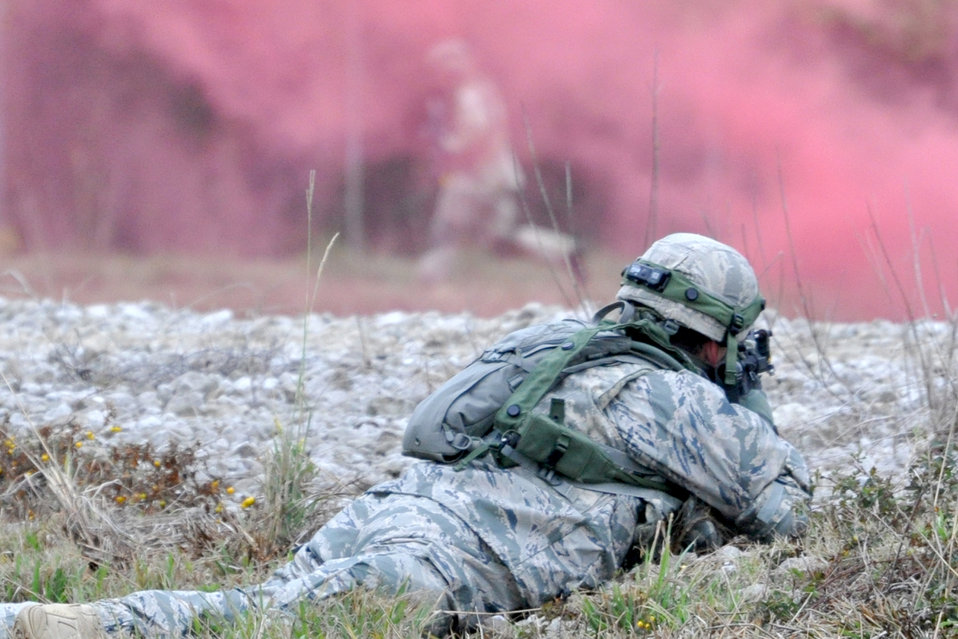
Taking aim

Tech. Sgt. Melvin Cargill, 917th Security Forces Squadron tactics team, takes out an